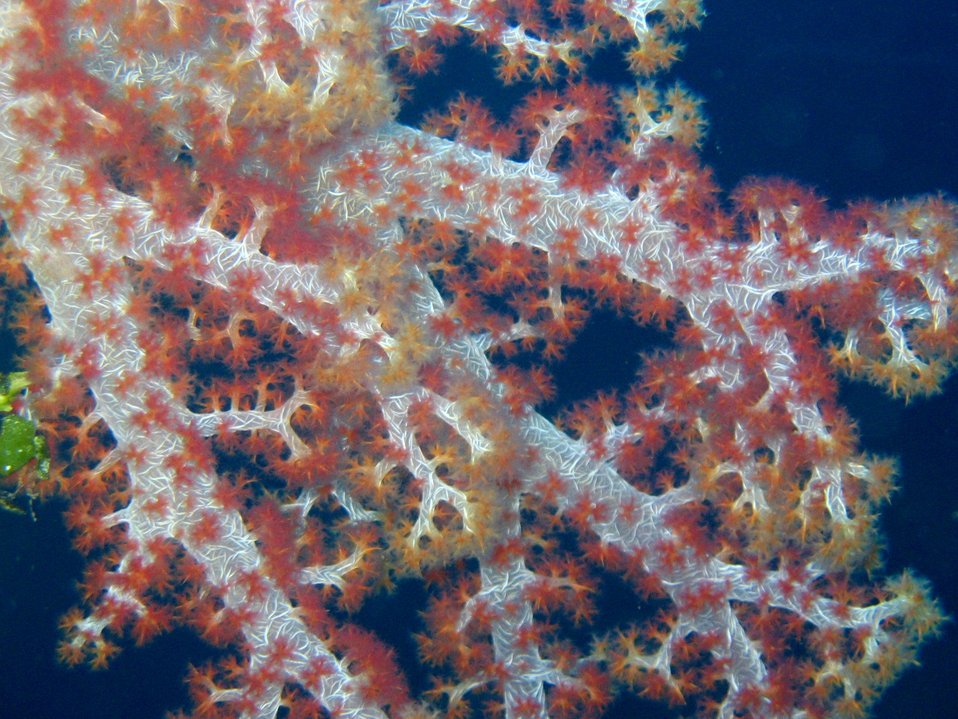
Soft corals (Dendronephthya sp.)